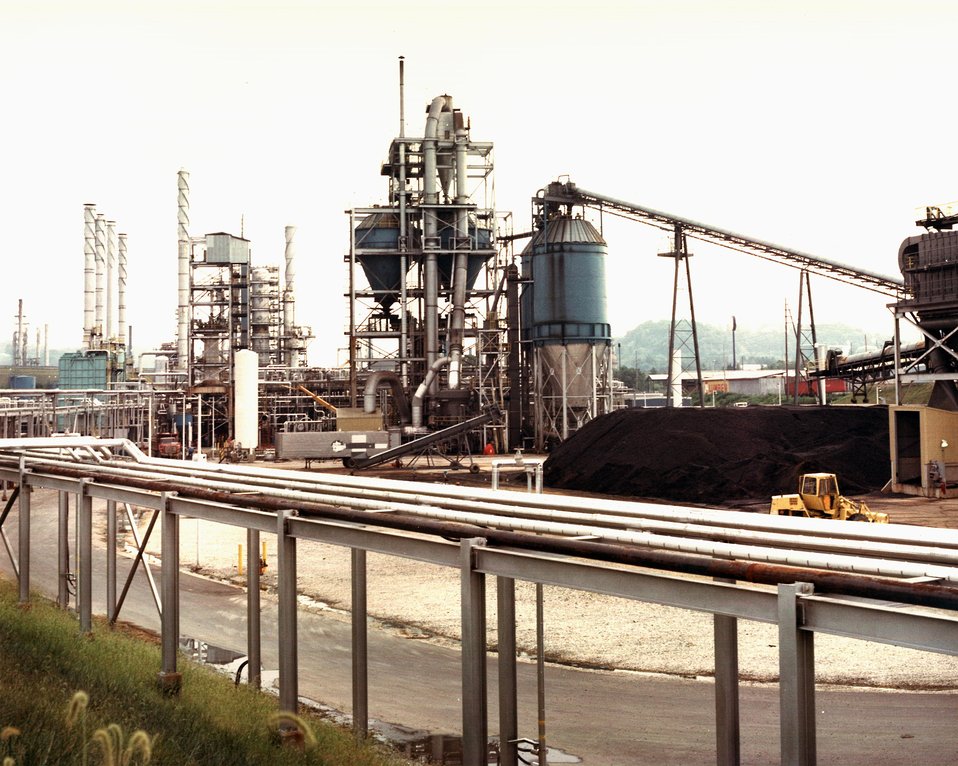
COAL PREPARATION AND STORAGE AREA.